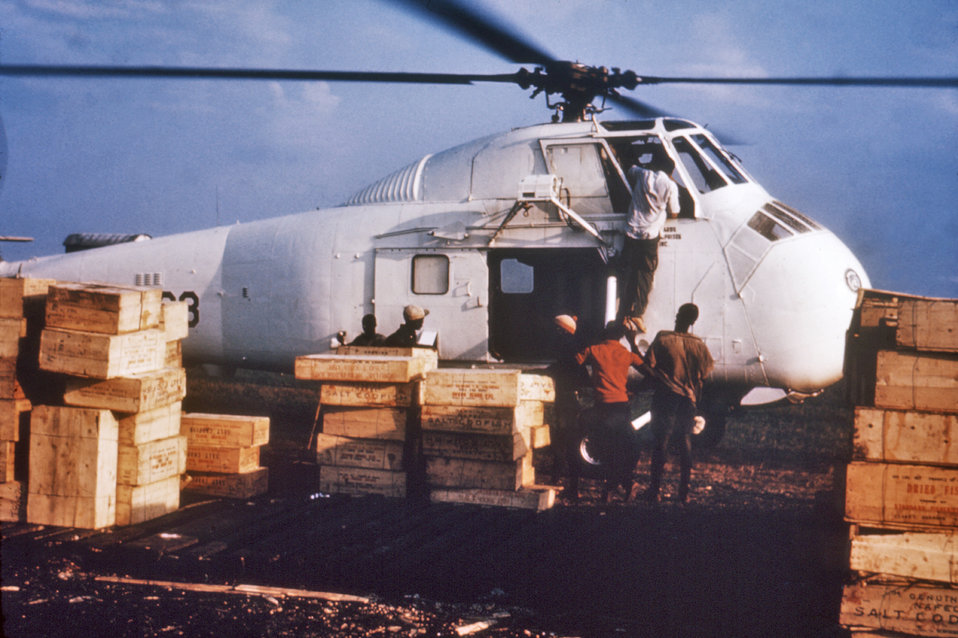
This late 1960s photograph depicts a helicopter, which has landed at a make-shift airport in Calabar, Nigeria, upon which health workers were loading crates of dried fish, a favorite food in that area, to be shipped to refugee camps during the Nigerian-Biafran war.